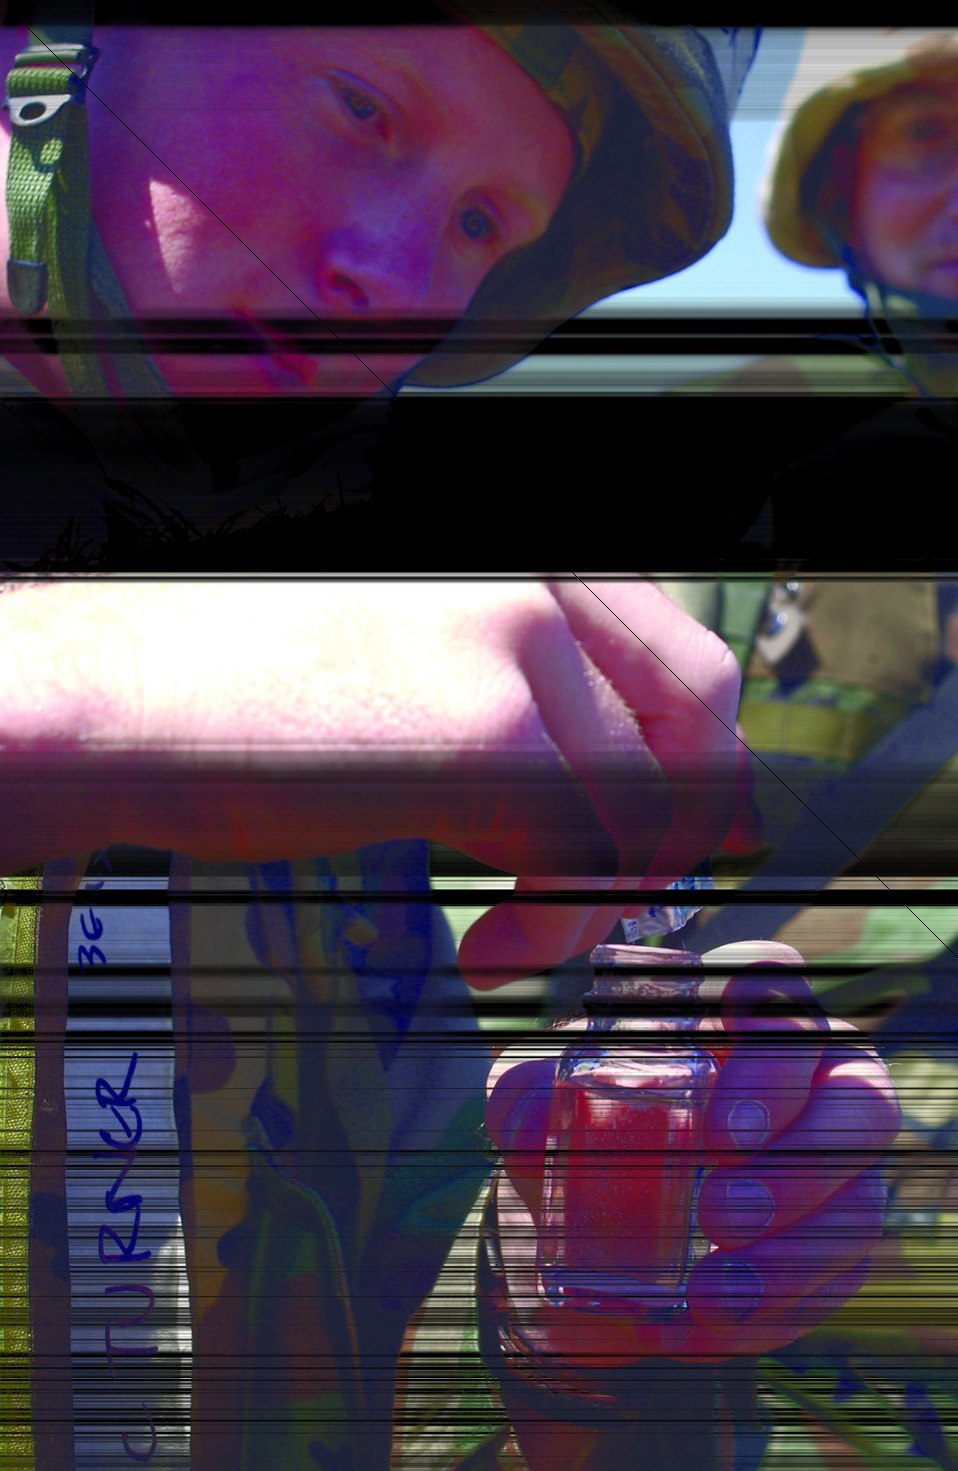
Ready for anything

VANDENBERG AIR FORCE BASE, Calif. -- Airman 1st Class Dan Turner tests the chlorine levels of the potable water supply during an exercise here. The exercise prepared Airmen for situations they may encounter during deployments. Airman Turner is assigned to the 30th Civil Engineer Squadron.